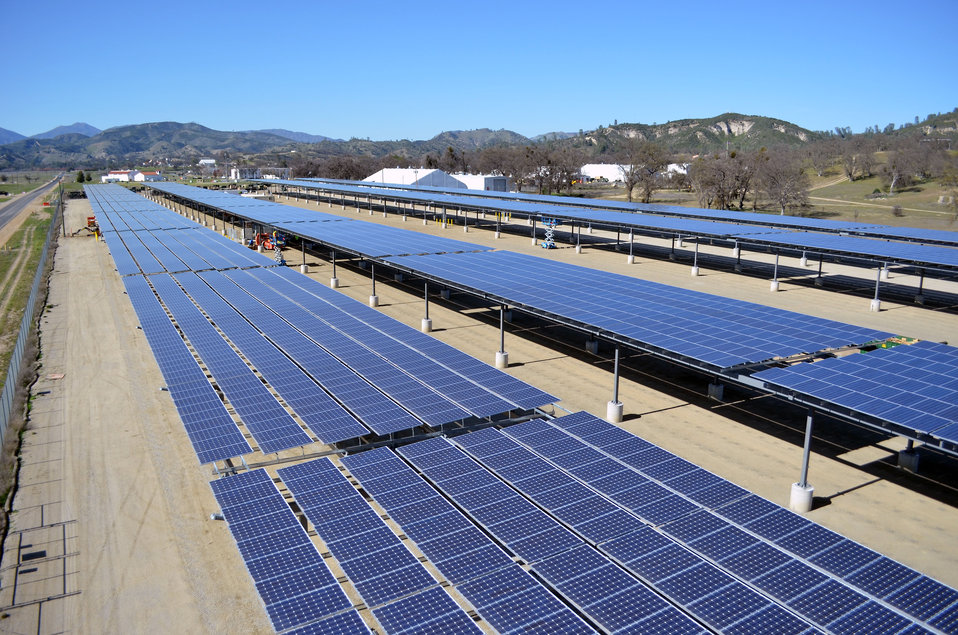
Solar project at Fort Hunter Liggett - March 2013

Solar panel arrays form a canopy at a construction site in Fort Hunter Liggett, Calif., March 12, 2013. The construction site is for phase 1 and 2 of a solar microgrid project at the installation, managed by the U.S. Army Corps of Engineers Sacramento District. Phase 1 was completed in April 2012 and generates one megawatt of power, enough energy to power 250 to 300 homes. Phase 2, scheduled for completion in May 2013, will generate an additional one megawatt of power and is expected to be the second of four at the post. The Sacramento District awarded contracts of $8.4 million for phase I and $9.7 million for phase 2. Along with the energy production, the cover provided by the panel arrays will shade the majority of the post’s vehicles. Fort Hunter Liggett is one of six pilot installations selected by the U.S. Army to be net zero energy, meaning the installation will create as much energy as it uses.